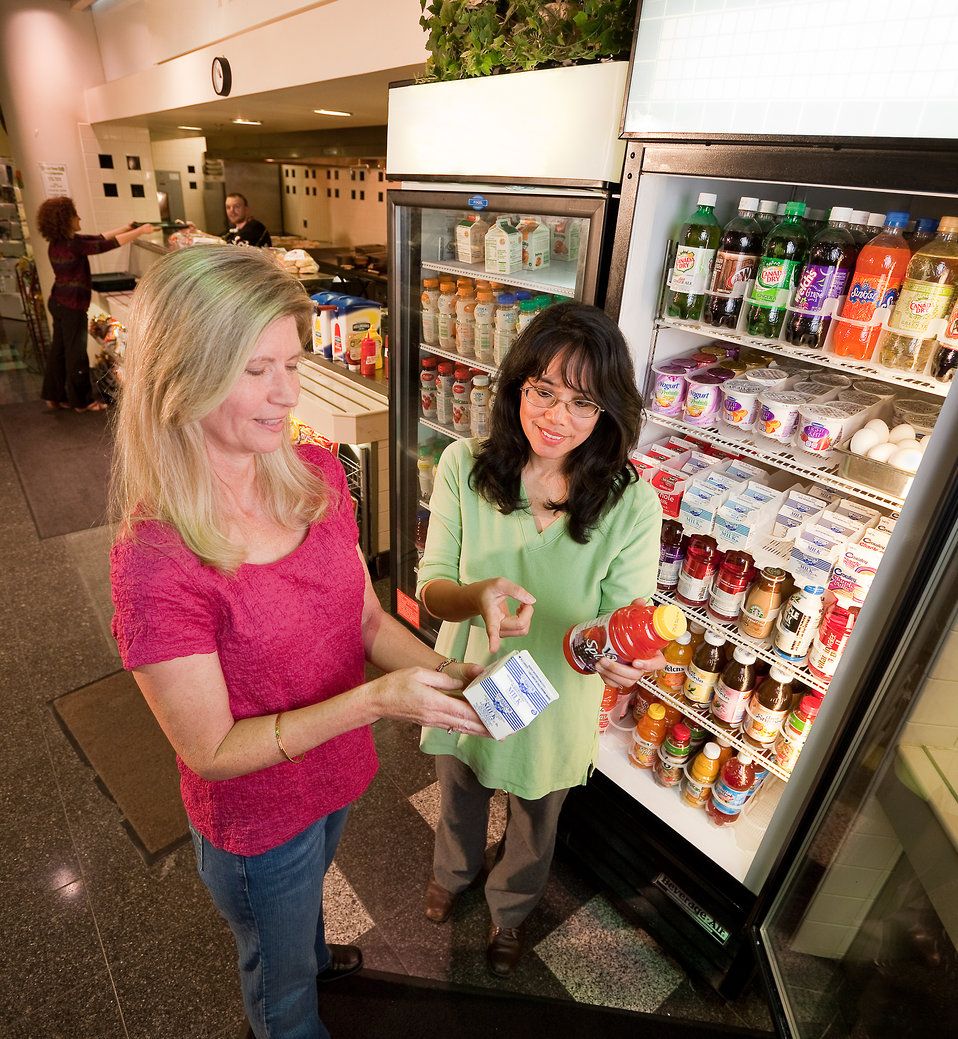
Consumers examine the nutrition facts panel on milk and fruit at a grocery store on Apr. 29, 2010. The food industry is responsible for the accuracy of nutrition facts panels required on packaged-food labels. Some food manufacturers use data from the national nutrient databases, provided by the U.S. Department of Agriculture (USDA) Agriculture Research Service (ARS) Beltsville Human Nutrition Research Center in Beltsville, MD to calculate values.